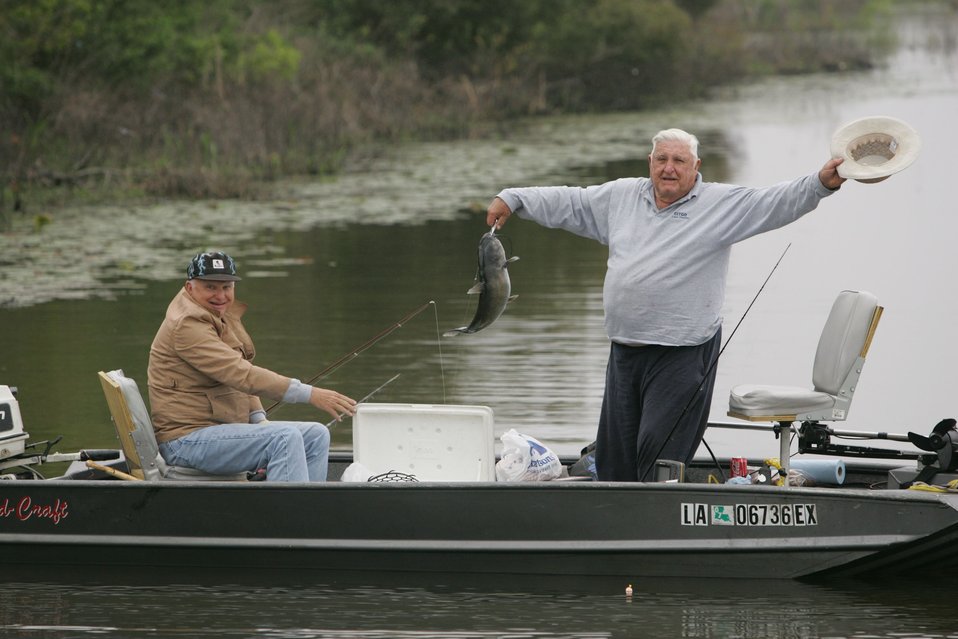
Joy of fishing, Steve Hillebrand, Lacassine Refuge, LA